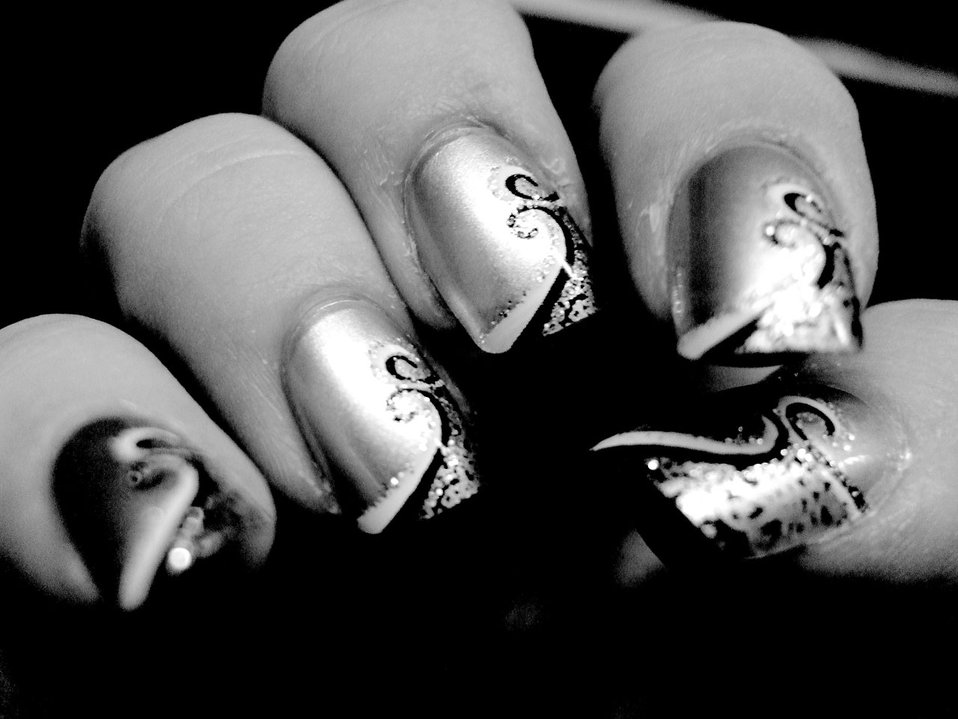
New nails

Nails with black and white filter and contrast enhancement.